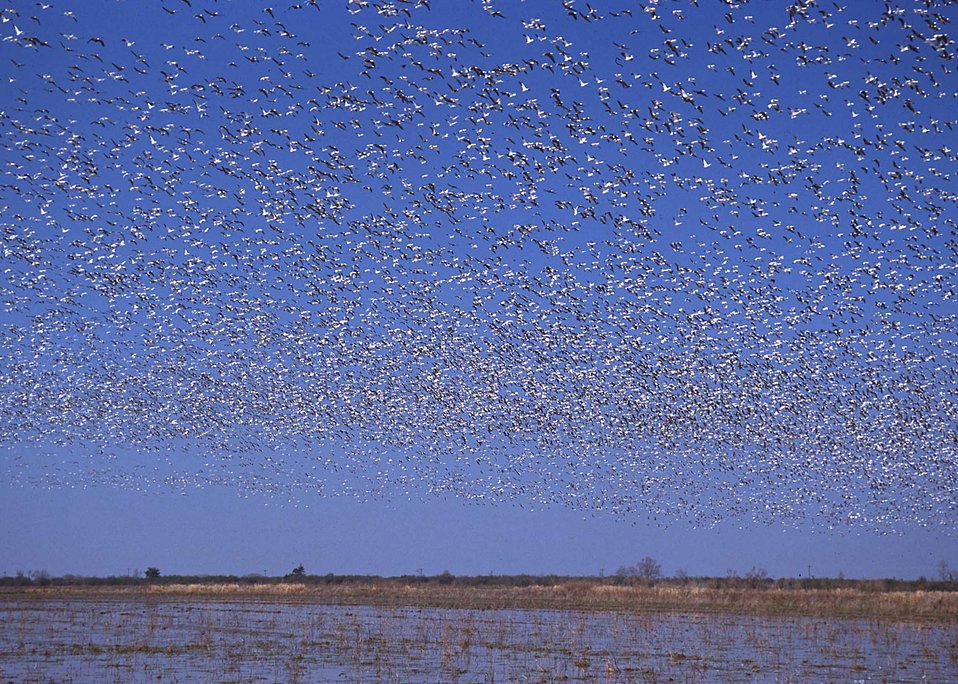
Flooded croplands near Gueydan, Louisiana attract thousands of geese in the winter.